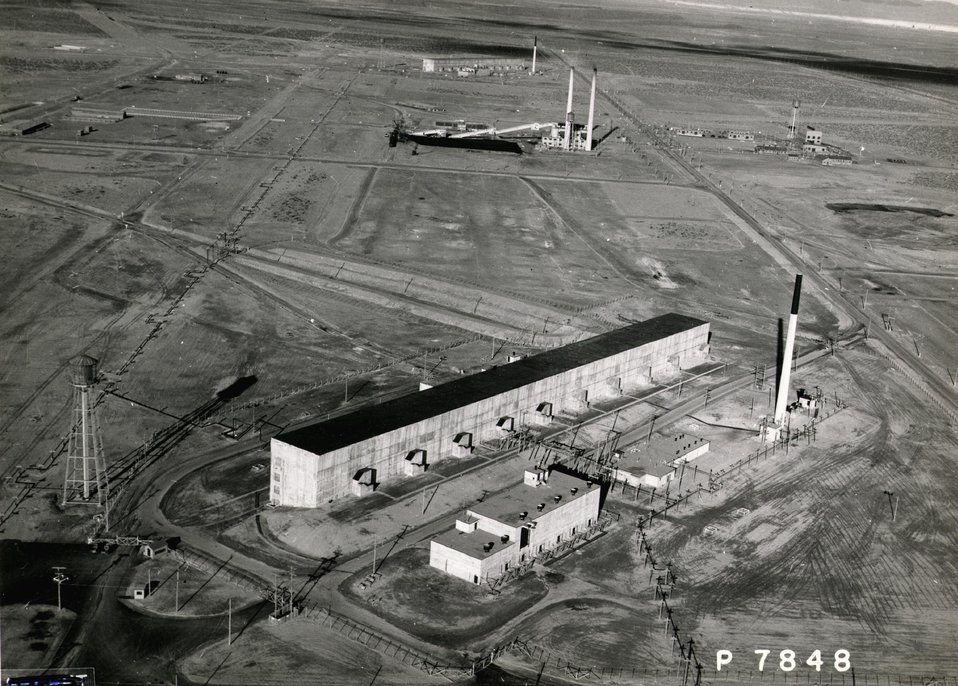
T-Plant aerial view of the 'Queen Mary.' Circa 1945.